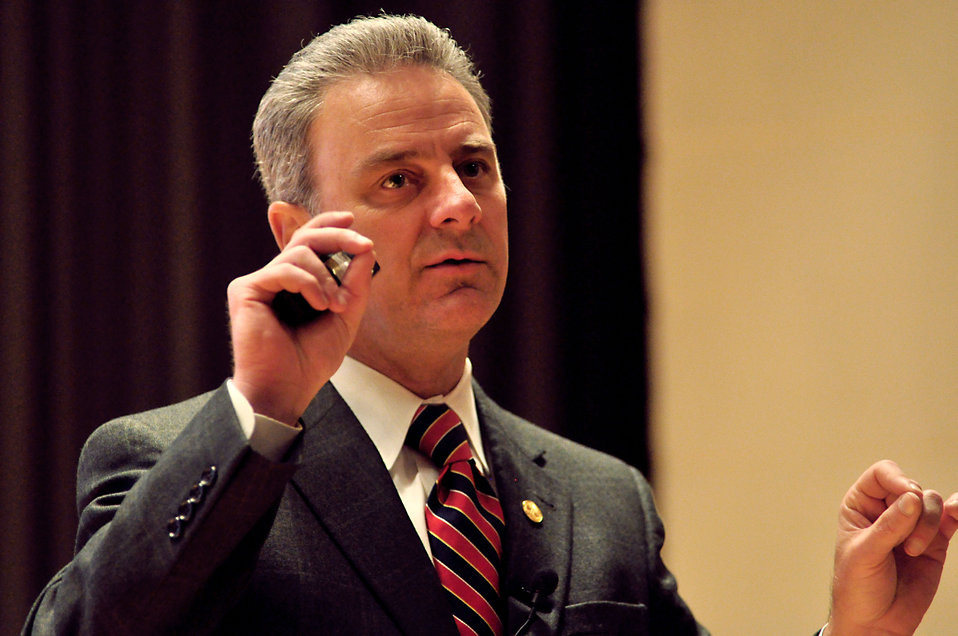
John Eschenberg Federal Project Director Oak Ridge Business Safety Partnership UPF 2014 Oak Ridge

14-042 DOE photo Lynn Freeny 4-2-2014 Oak Ridge Tennessee